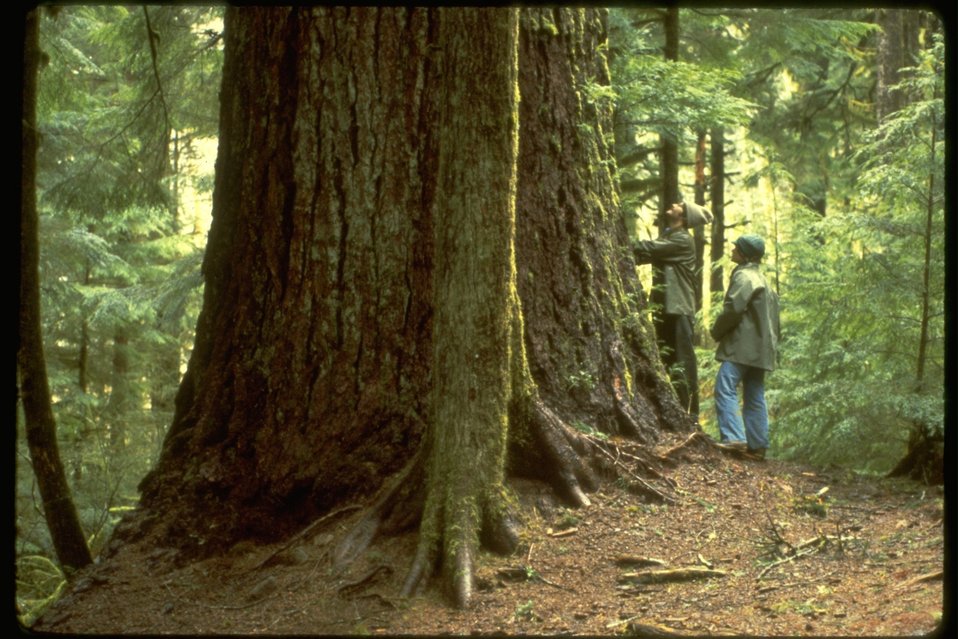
Person walking through the Valley of the Giants.